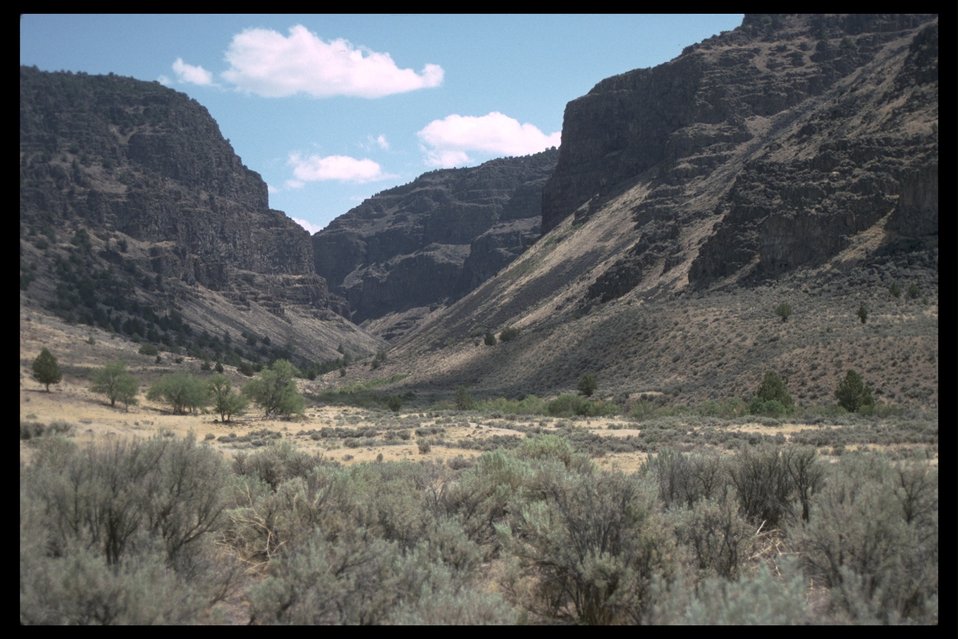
Mouth of the Home Creek Drainage in the Home Creek WSA. (2-85H)